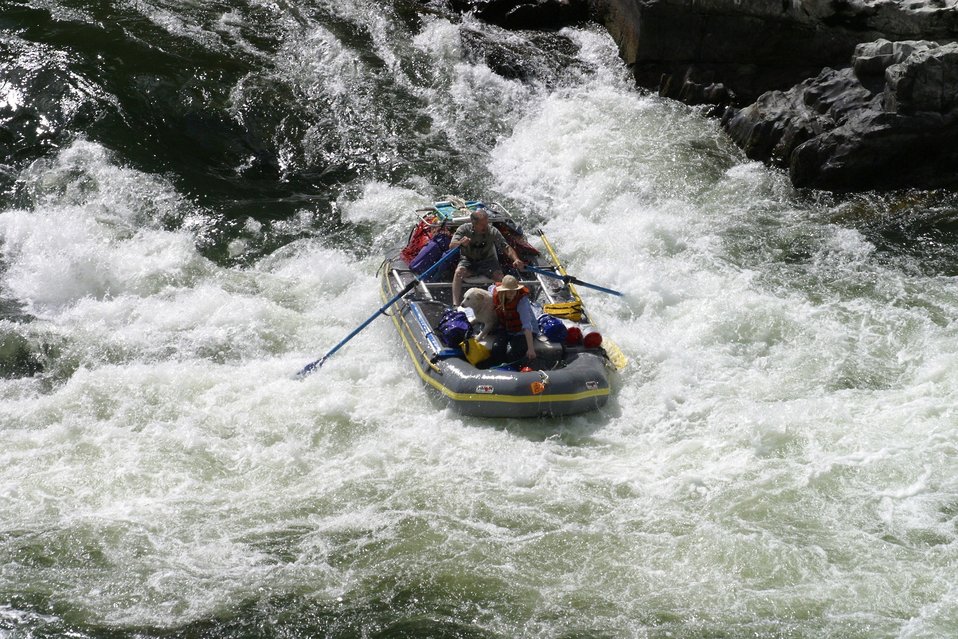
Boaters in Grave Creek Rapids